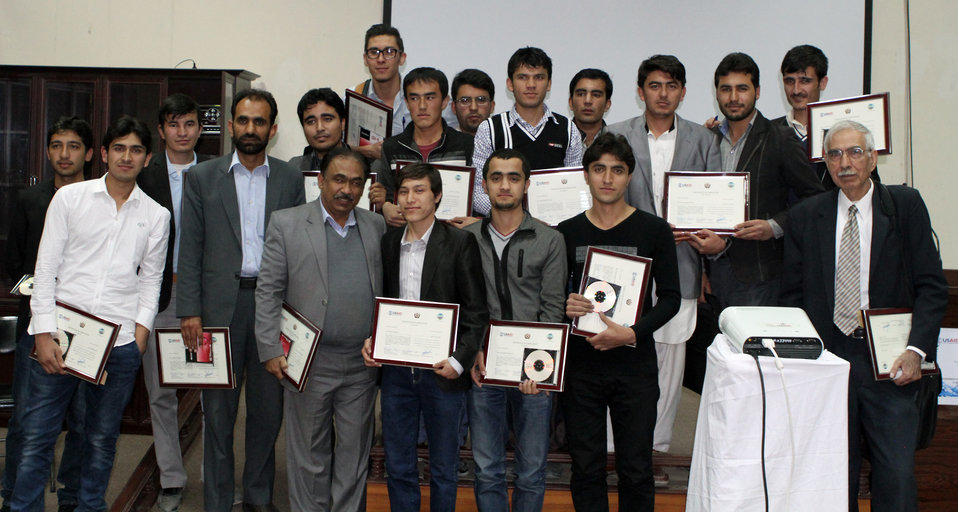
Professor Soorgul and Professor Abdul Qaium Karim speak with graduates of a course on Dams Design, Construction, and Operation and Maintenance attended by Kabul University engineering students and technicians from the Ministry of Energy and Water.